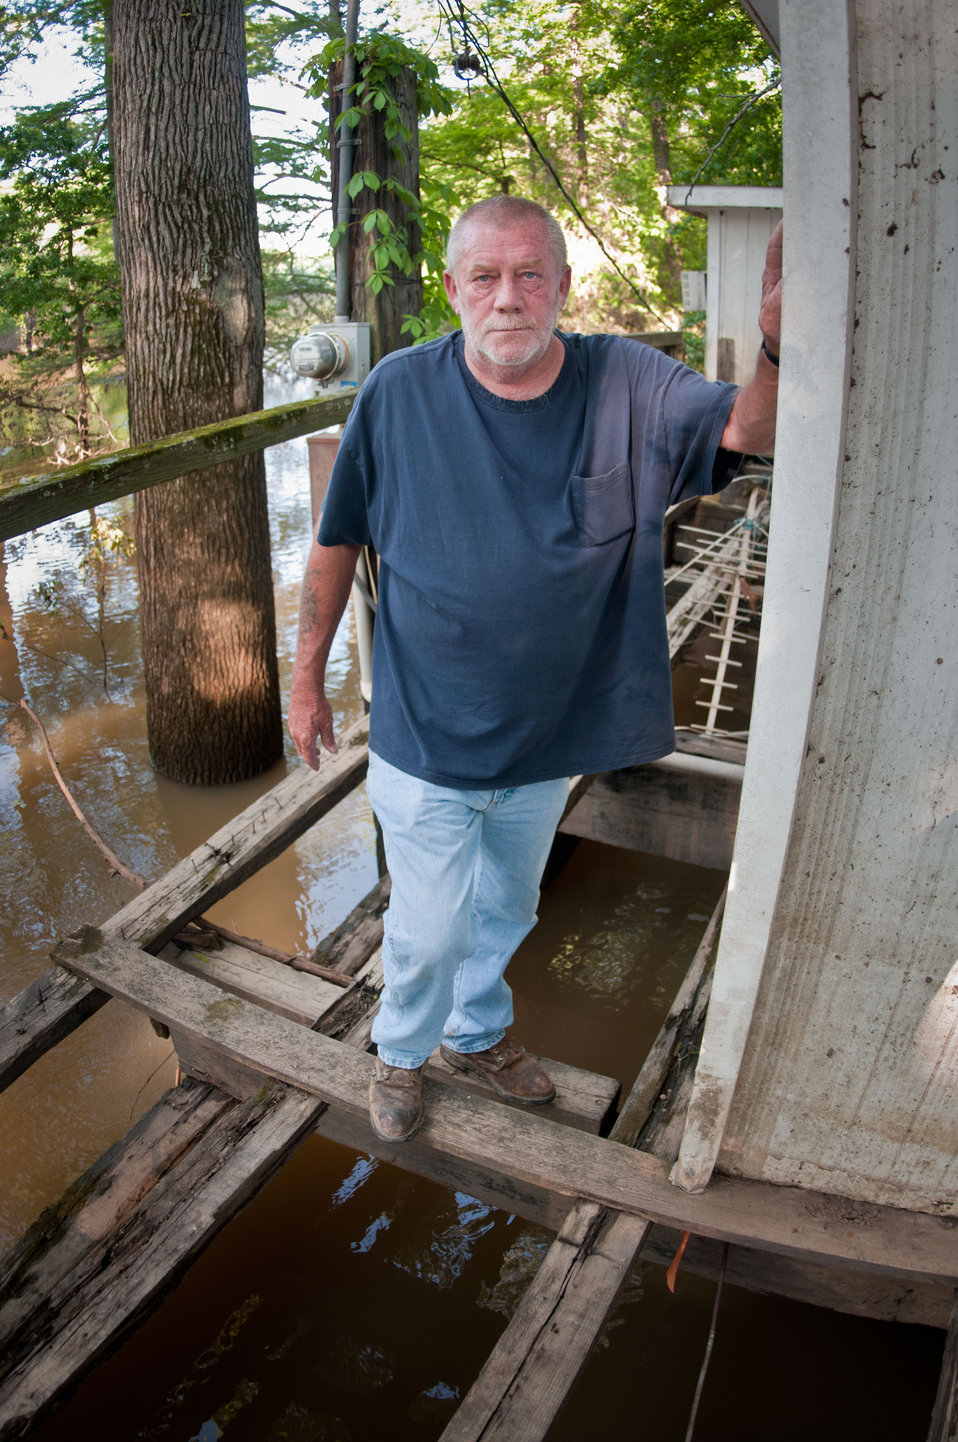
Lauderdale County, TN resident Robert Moffatt has barely a board to stand on behind his home near Open Lake on Saturday, May 21, 2011 after his home was damaged by flood waters from the Mississippi River. Normally he can walk under the thick beams he stands on.